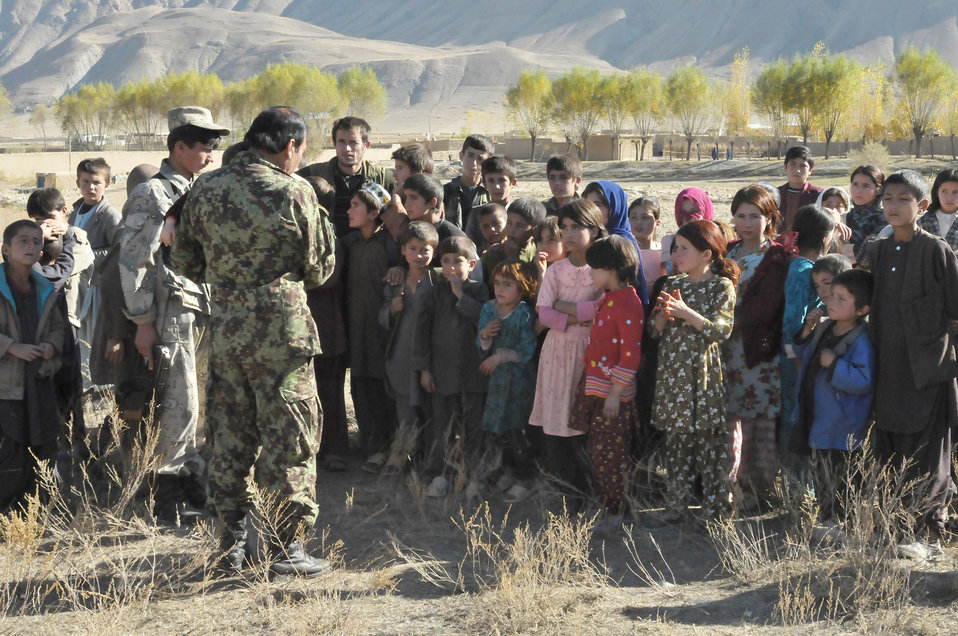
Afghan, NATO forces help bring supplies to build Afghan orphanage

An Afghan air force general officer addresses a group of children during a humanitarian assistance mission Nov. 11, 2010, in Baharak, Afghanistan. U.S., Afghan and coalition forces are supporting efforts by the non-governmental organization Global Roots to build an orphanage in the area.